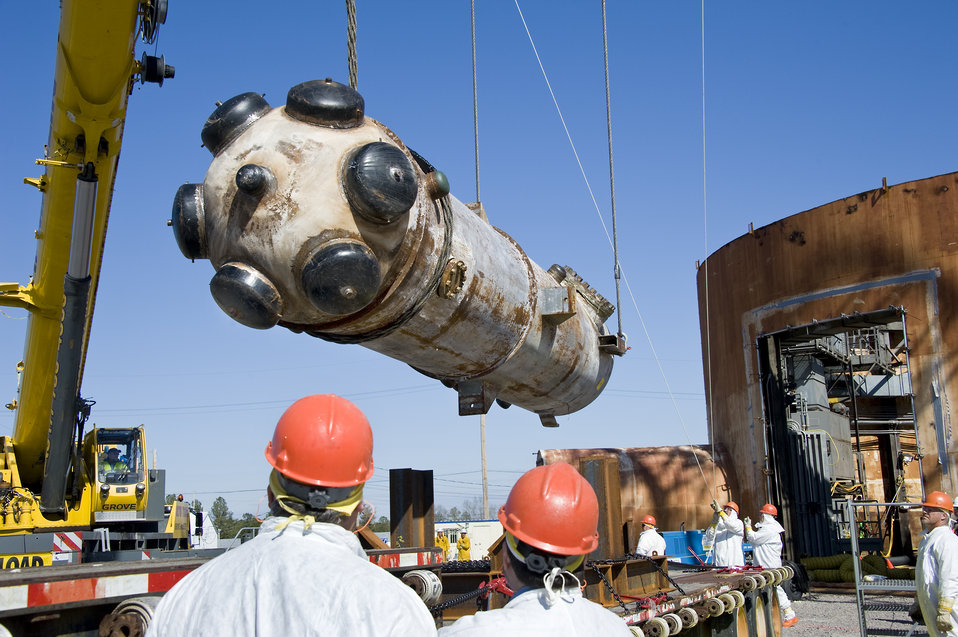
HWCTR steam generator

Work is under way to decommission the Heavy Water Components Test Reactor, which had been used to test experimental fuel assemblies for commercial heavy-water power reactors. SRS is scheduled to remove the dome of the reactor this month (January 2011). Workers also will displace the reactor vessel and steam generators, grout the remaining structure in place, and install a concrete cover over the reactor’s footprint.